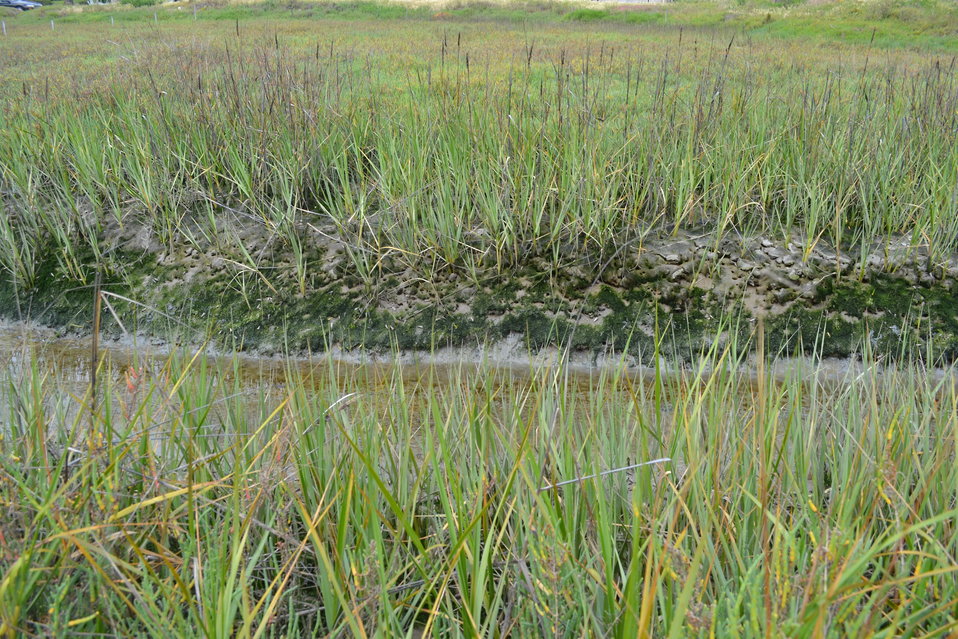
California Cordgrass (Spartina foliosa)horizon